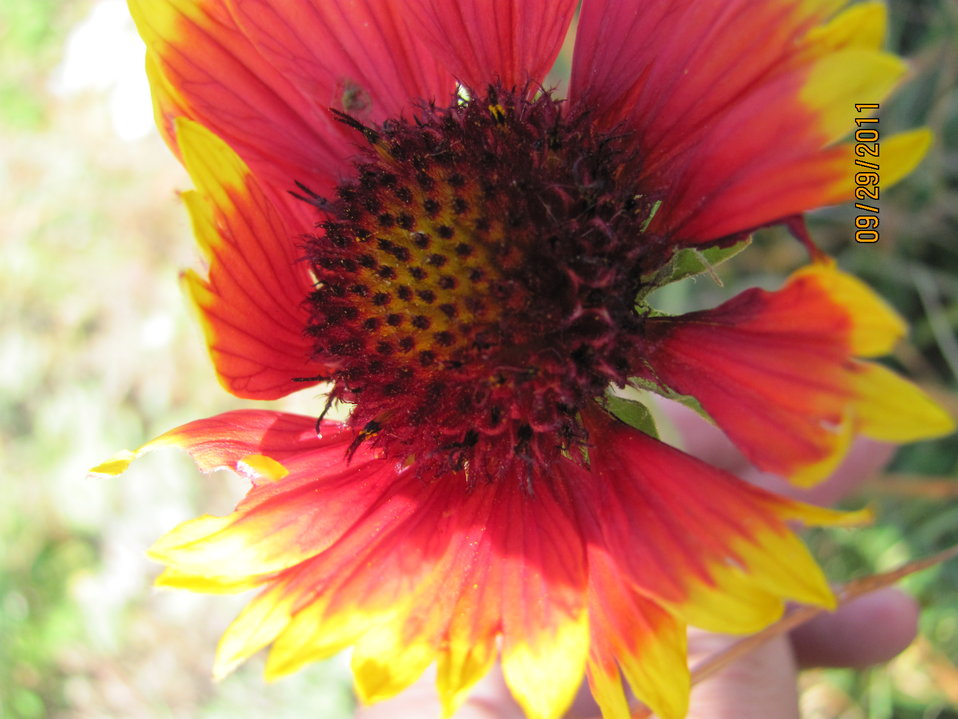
Blanket Flower (Gaillardia aristata)

Close-up view of a Blanket Flower (Gaillardia aristata). When it blooms in June, the flowers are yellow with red surrounding the middle. This specimen was found on the Woodworth station, on a prairie hillside in Chase Lake National Wildlife Refuge in North Dakota.